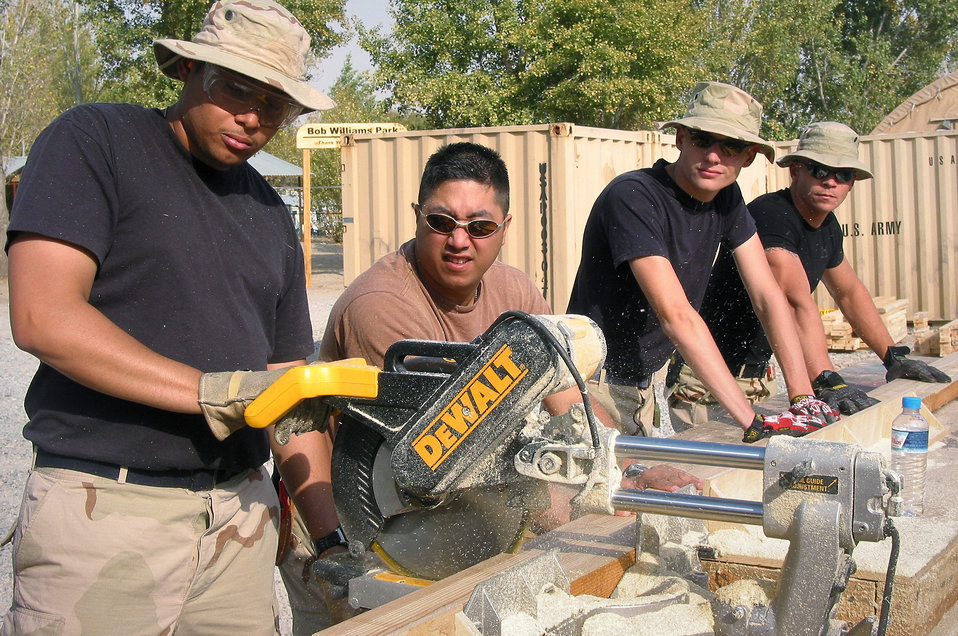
Combat Communicators

MANAS AIR BASE, Kyrgyzstan -- Members of the 5th Combat Communications Group, Robins Air Force Base, Ga., help out with a playground project to benefit the Childrens Cancer Center in Bishkek, Kyrgyzstan, on Oct. 25. The 5th CCG arrived at Manas Air Base on Oct. 21 to stage and prepare for possible forward deployment to Pakistan to aid in earthquake relief efforts.